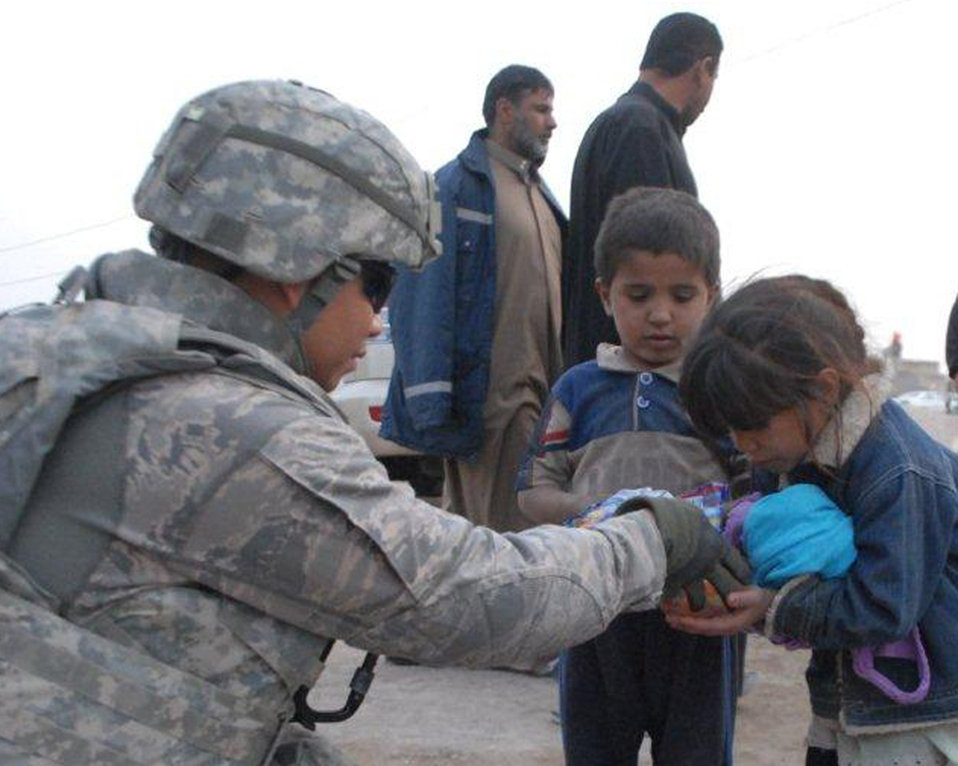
Airmen donate school supplies to local Iraqi children

U.S. Air Force Master Sgt. Luis Buot, Echelon Above Division-Advise and Train maintenance advisor and Pemberton, N.J., native, gives candy to two local Iraqi children Dec. 16 at Ur Elementary School near Tallil Air Base, Iraq. Sergeant Buot is deployed from Joint Base McGuire-Dix-Lakehurst, N.J.